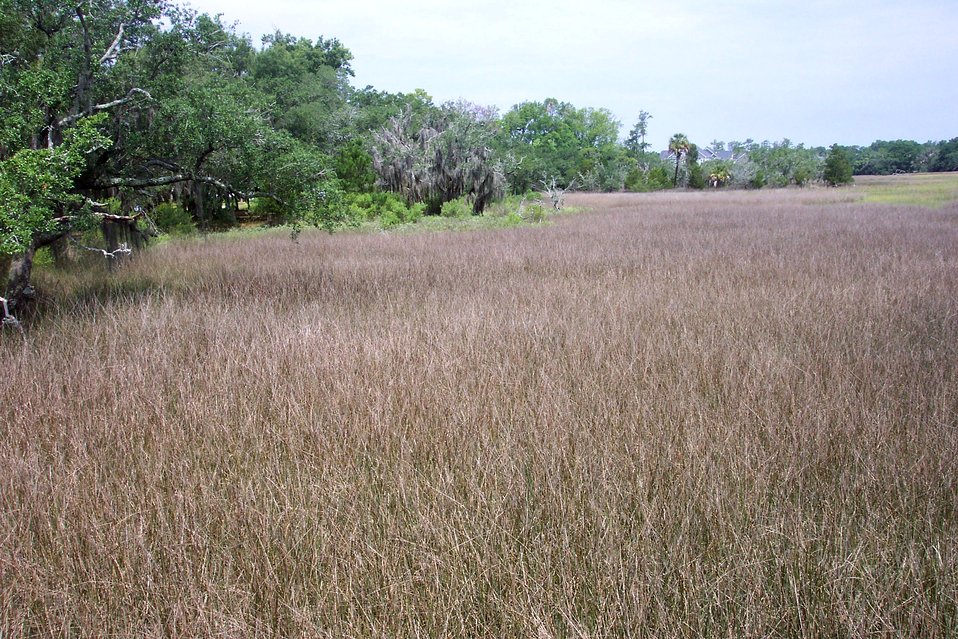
The edge of the salt marsh meeting oak and other higher ground flora on Daniel Island.